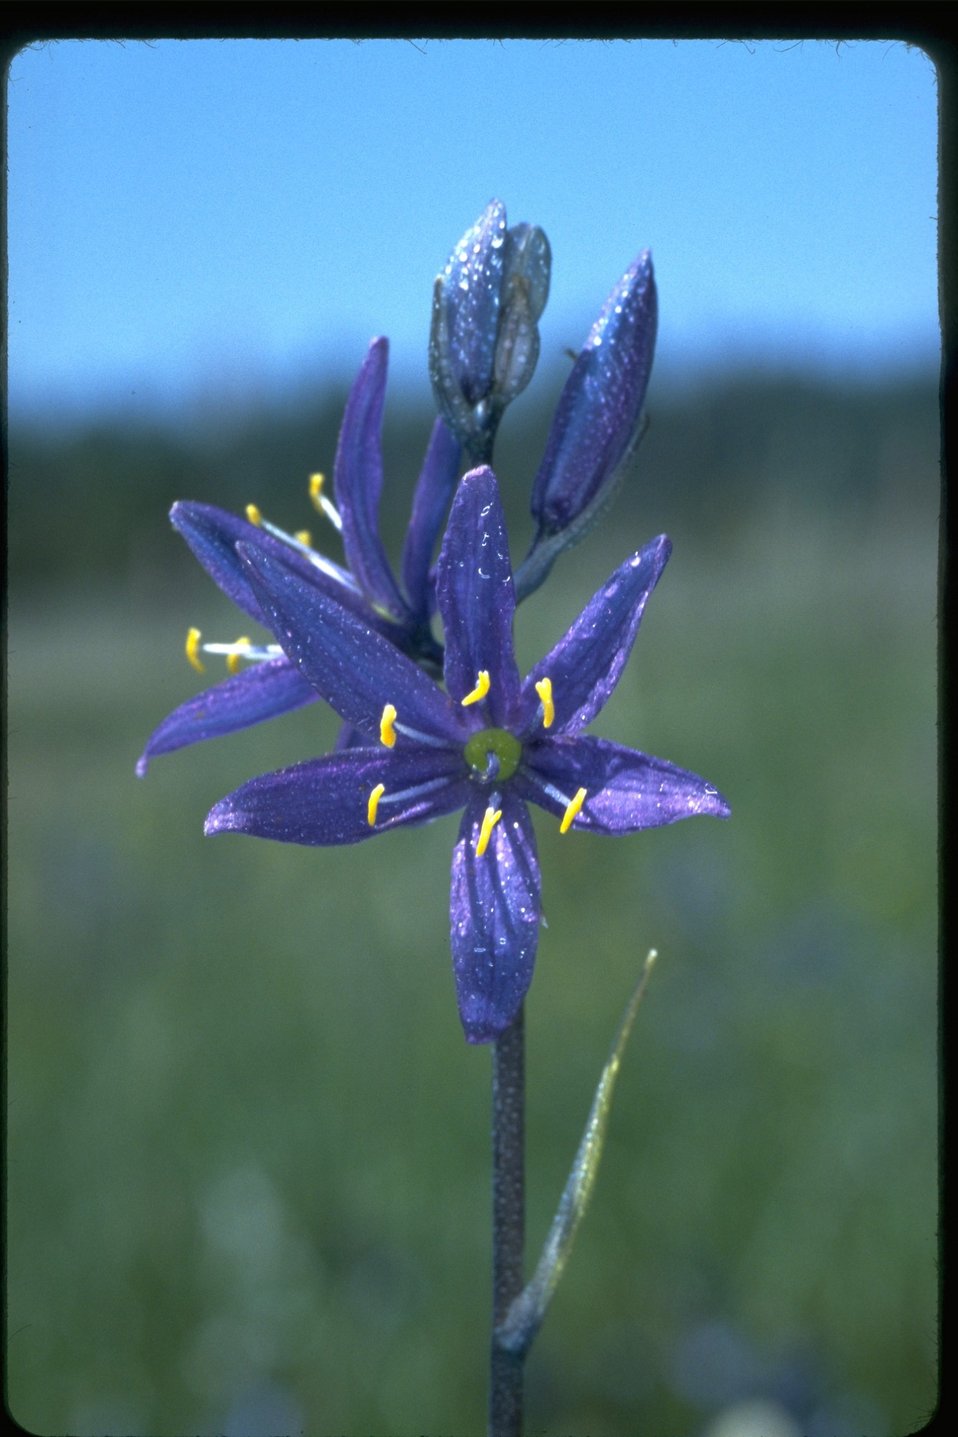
Medium shot of Camas wildflower.